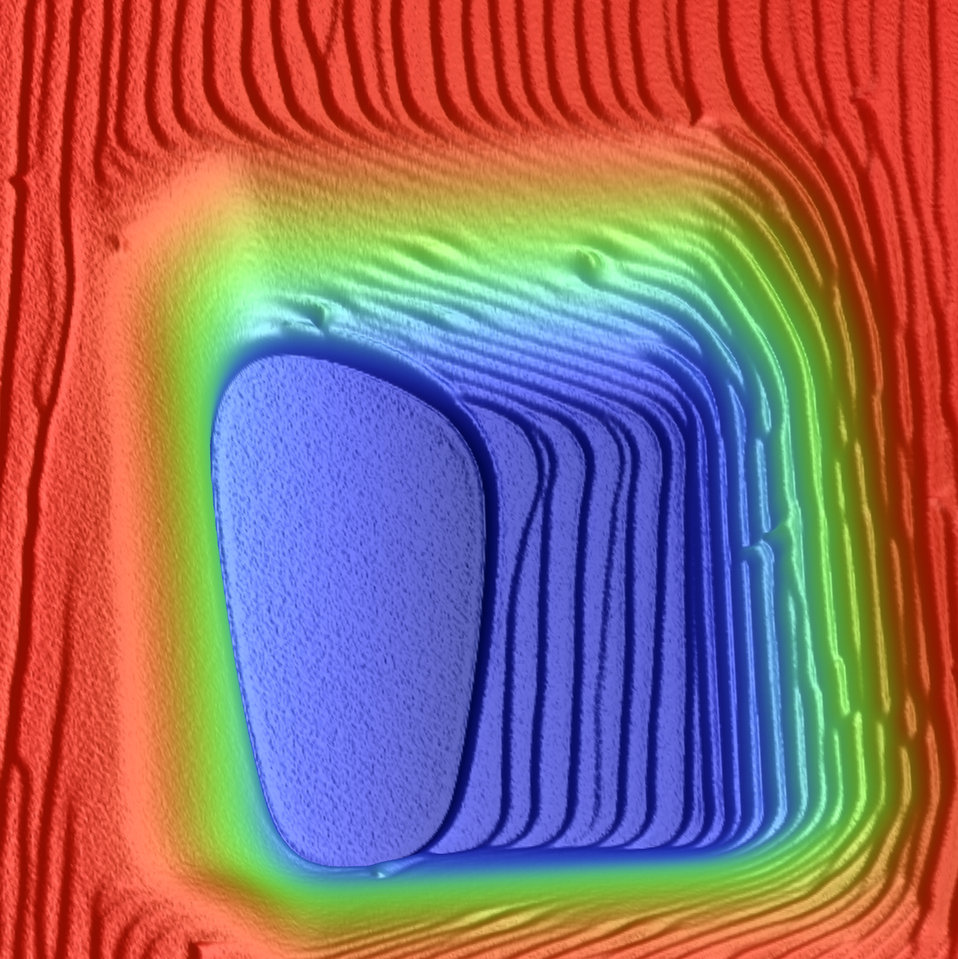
Silicon Staircase

Steps of silicon serve as a natural ruler for measuring vertical dimensions. This silicon 'target' has step heights ranging from tens to hundreds of nanometers leading down to a flat, single atomic layer measuring only 0.3 nanometer. The microscope used to make this image sits on an isolated concrete slab equipped with air springs to cancel out even minute vibrations that could ruin the nanoscale measurements.